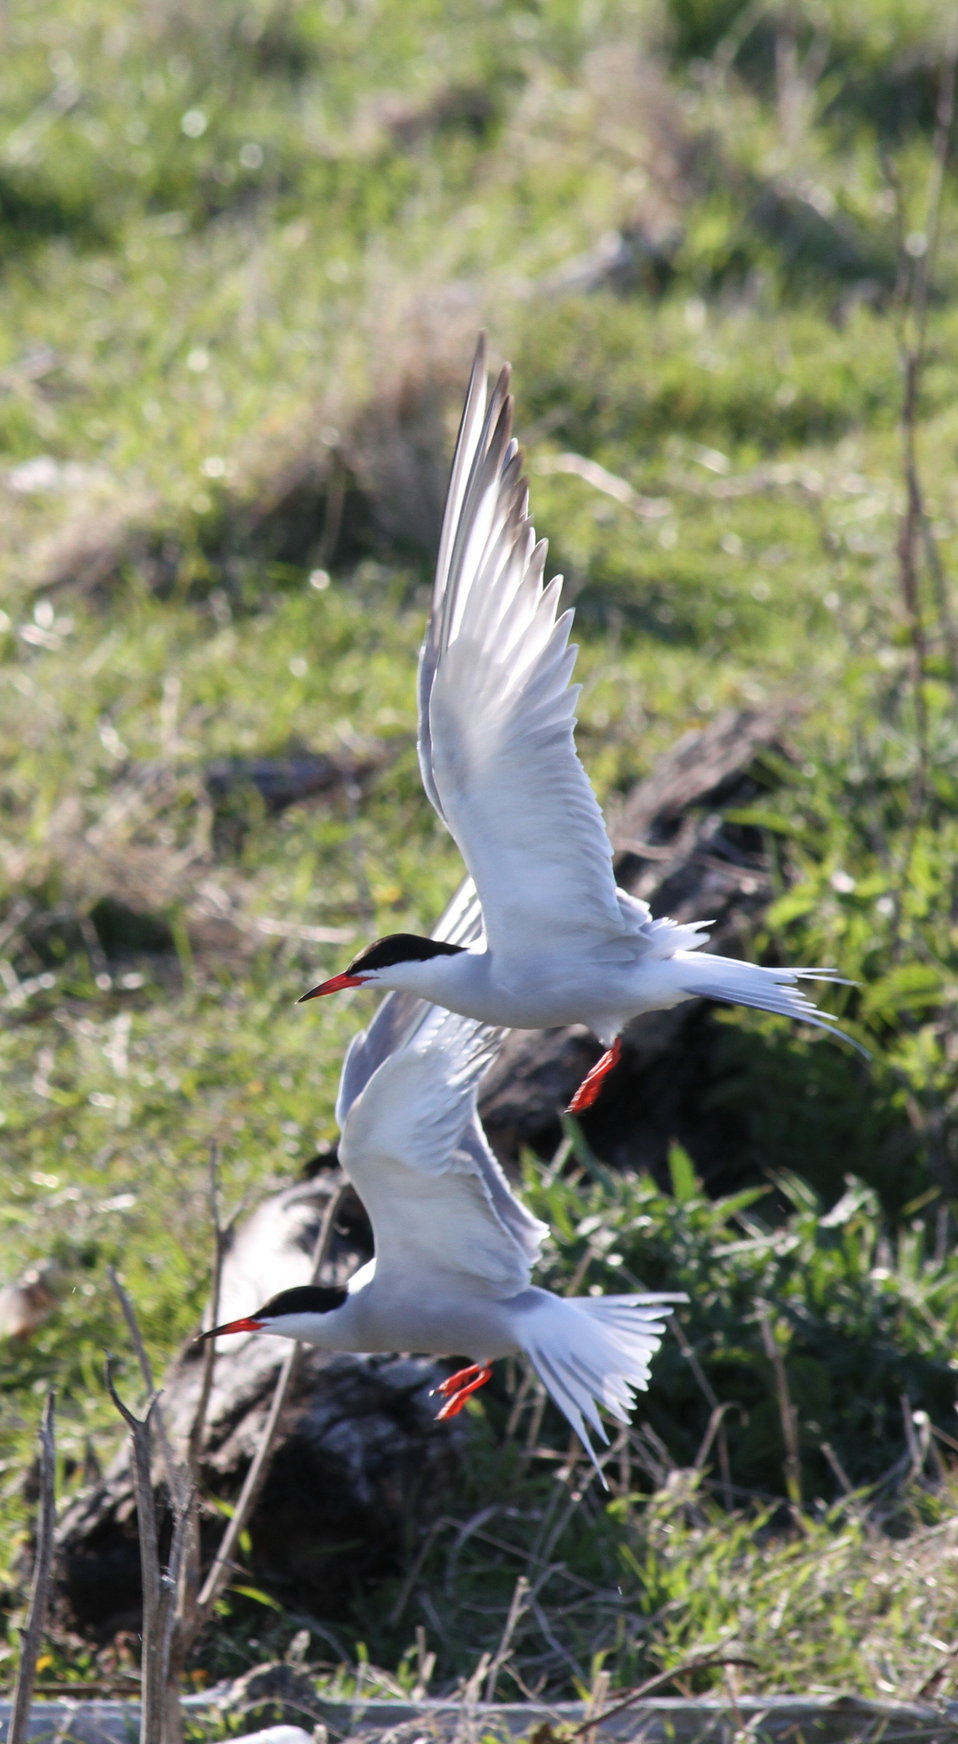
Flying Terns

Metinic Island, Maine Coastal Islands NWR. Summer with the Seabirds blog: mainecoastalislands.wordpress.com/2010/07/23/metinic-isla...